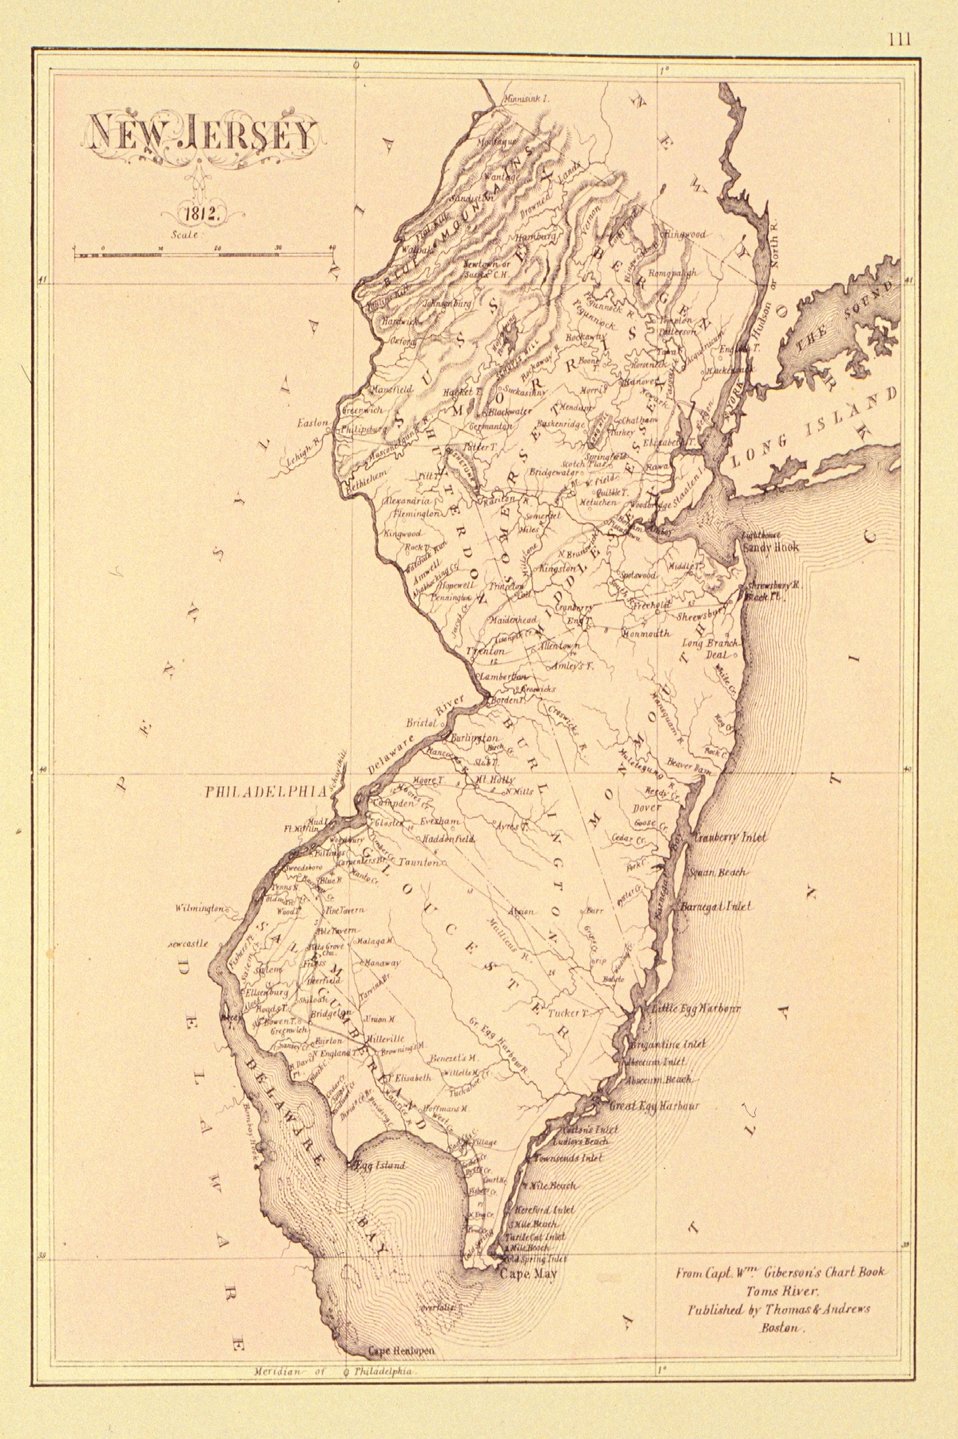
Map of New Jersey dated 1812 in 'Historical and Biographical Atlas of the New Jersey Coast.'